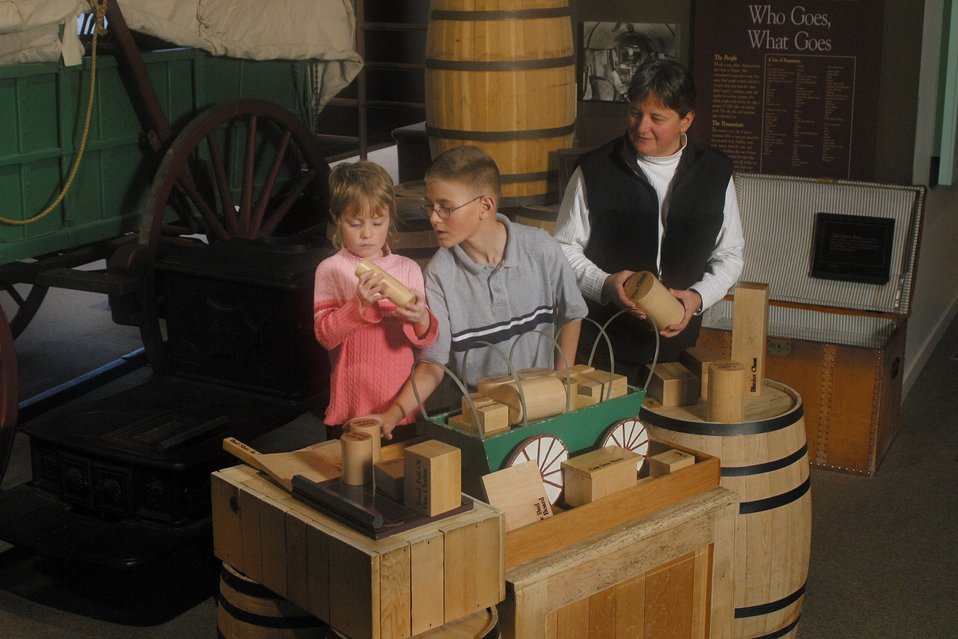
Visitors can use the interactive display to decide what to put into their wagon before leaving on their Oregon Trail journey.